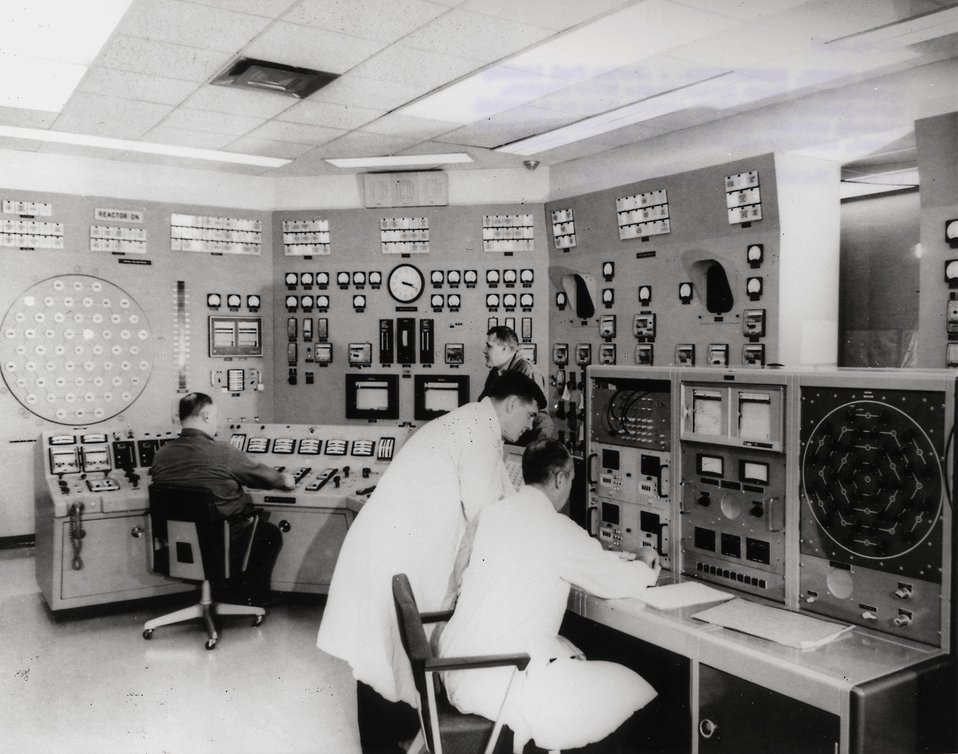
During the final fuel loading operations at Peach Bottom Atomic Power Station, white-jacketed physicists analyze data at a special start-up console, as two reactor operators, in background, maintain control at the reactor console. Circa 1969.